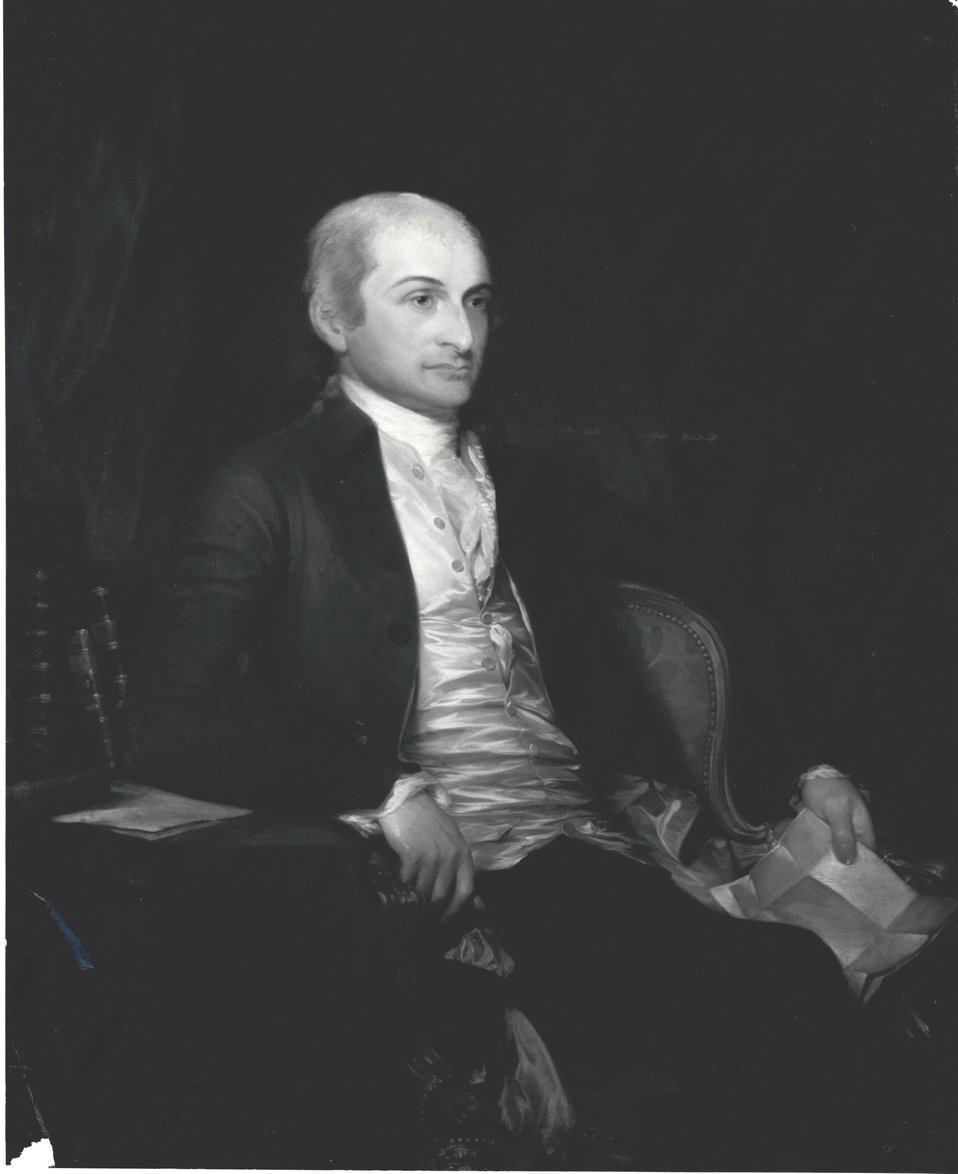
John Jay, U.S. Secretary of Foreign Affairs

John Jay, Secretary of Foreign Affairs, May 7, 1784 to March 4, 1789